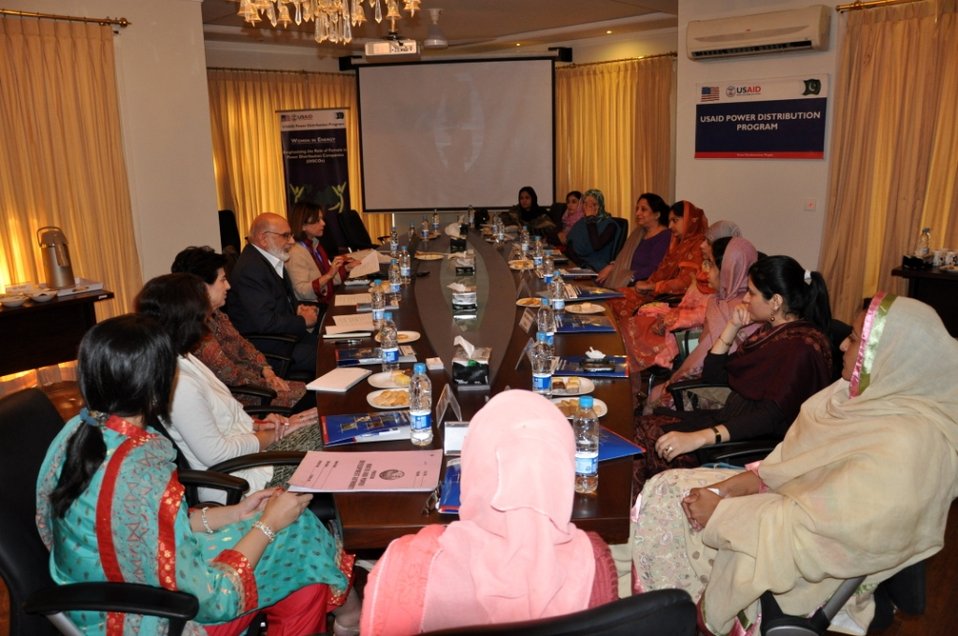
DISCOs Gender Consultation Meeting at USAID Power Distribution Program Office Islamabad

Islamabad, November 29, 2011 - 11 dynamic women, representing 7 power distribution companies (DISCOs) met in a unique session, organized by USAID Power Distribution Program. A comfortable working environment for women at work place means better productivity for the company.